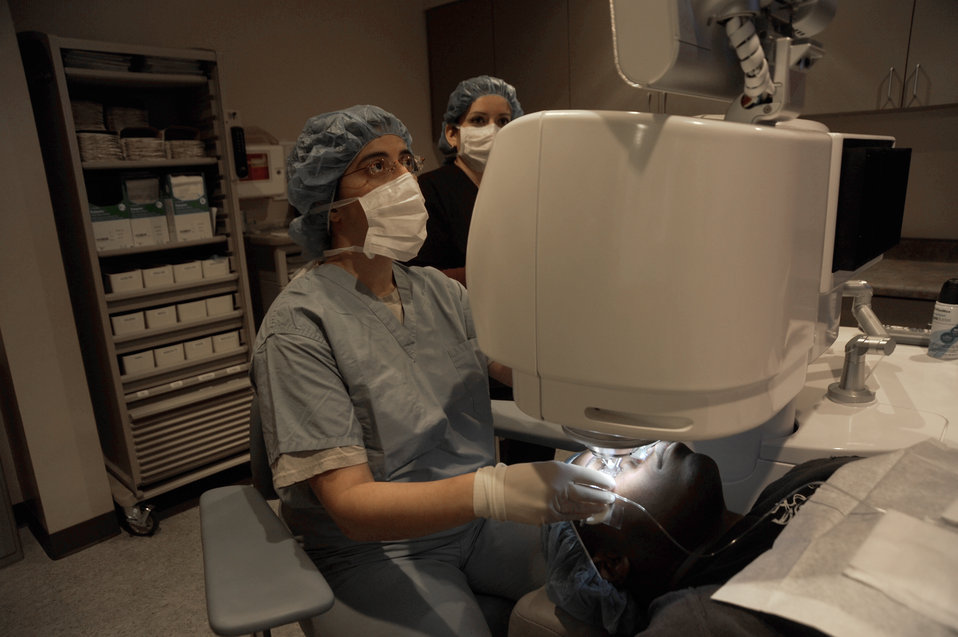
WHMC LASIK

Maj. (Dr.) Vashuda Panday uses a laser to cut a flap in the cornea of Army Staff Sgt. Stanley Arnold as a step in his LASIK refractive surgery March 3, 2011, at Lackland Air Force Base, Texas. Dr. Panday is the chief of cornea refractive surgery at the Joint Refractive Surgery Center and Sergeant Arnold is an instructor and infantryman at Ft. Huachuca, Ariz.